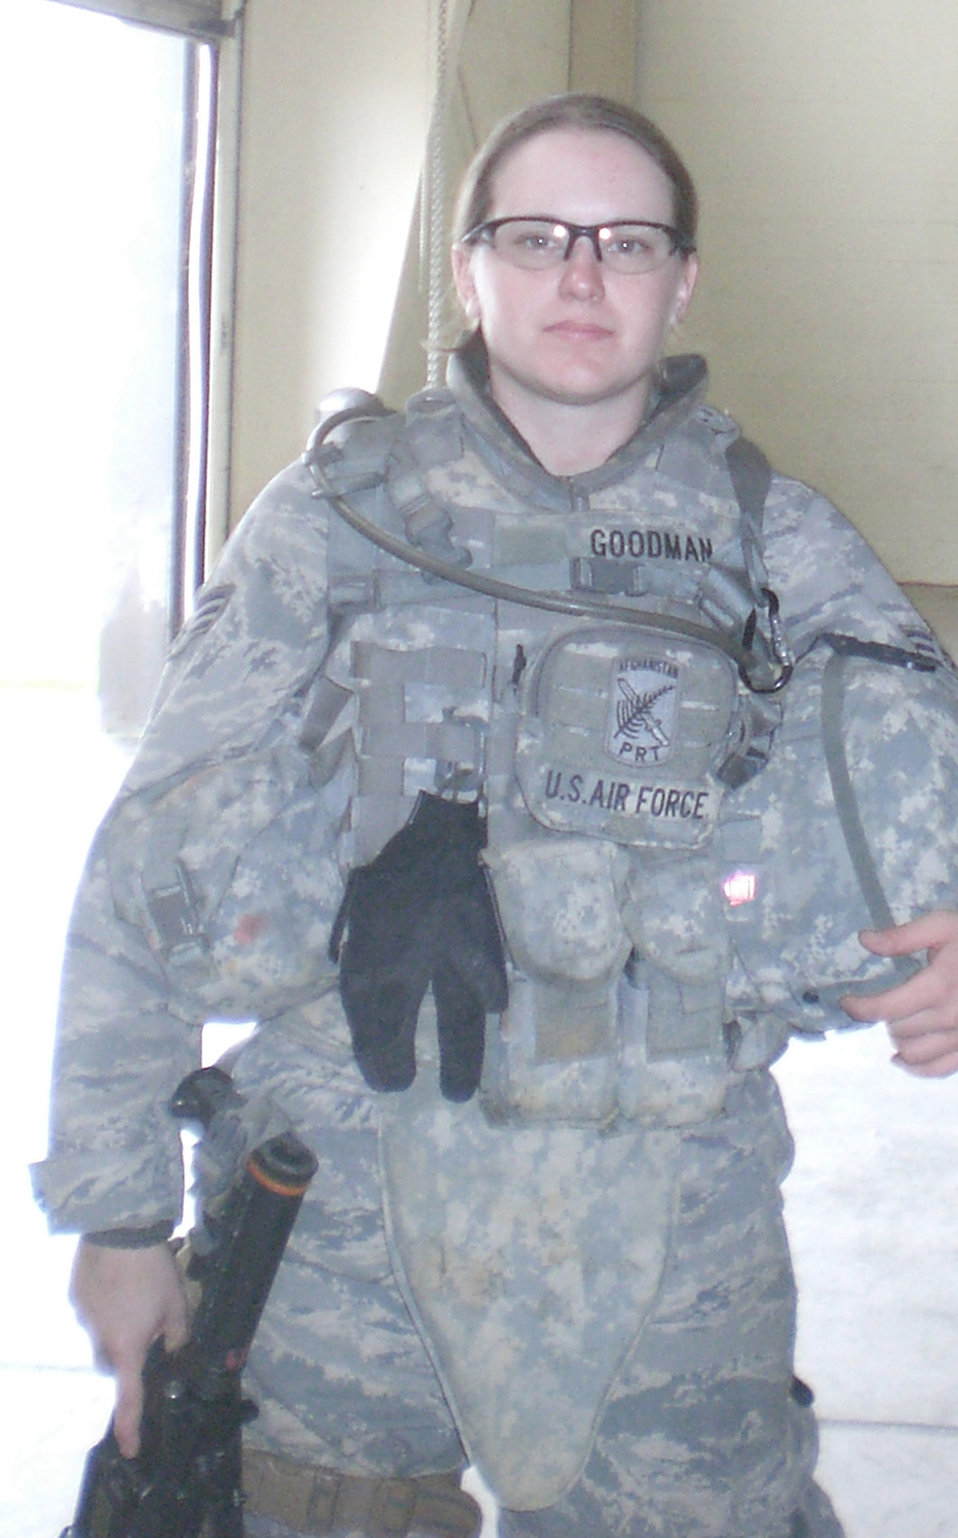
Pope Airman Killed in Afghanistan

Senior Airman Ashton Goodman was killed in action in Afghanistan May 26. Airman Goodman was assigned to 43rd Logistics Readiness Squadron at Pope Air Force Base, N.C.